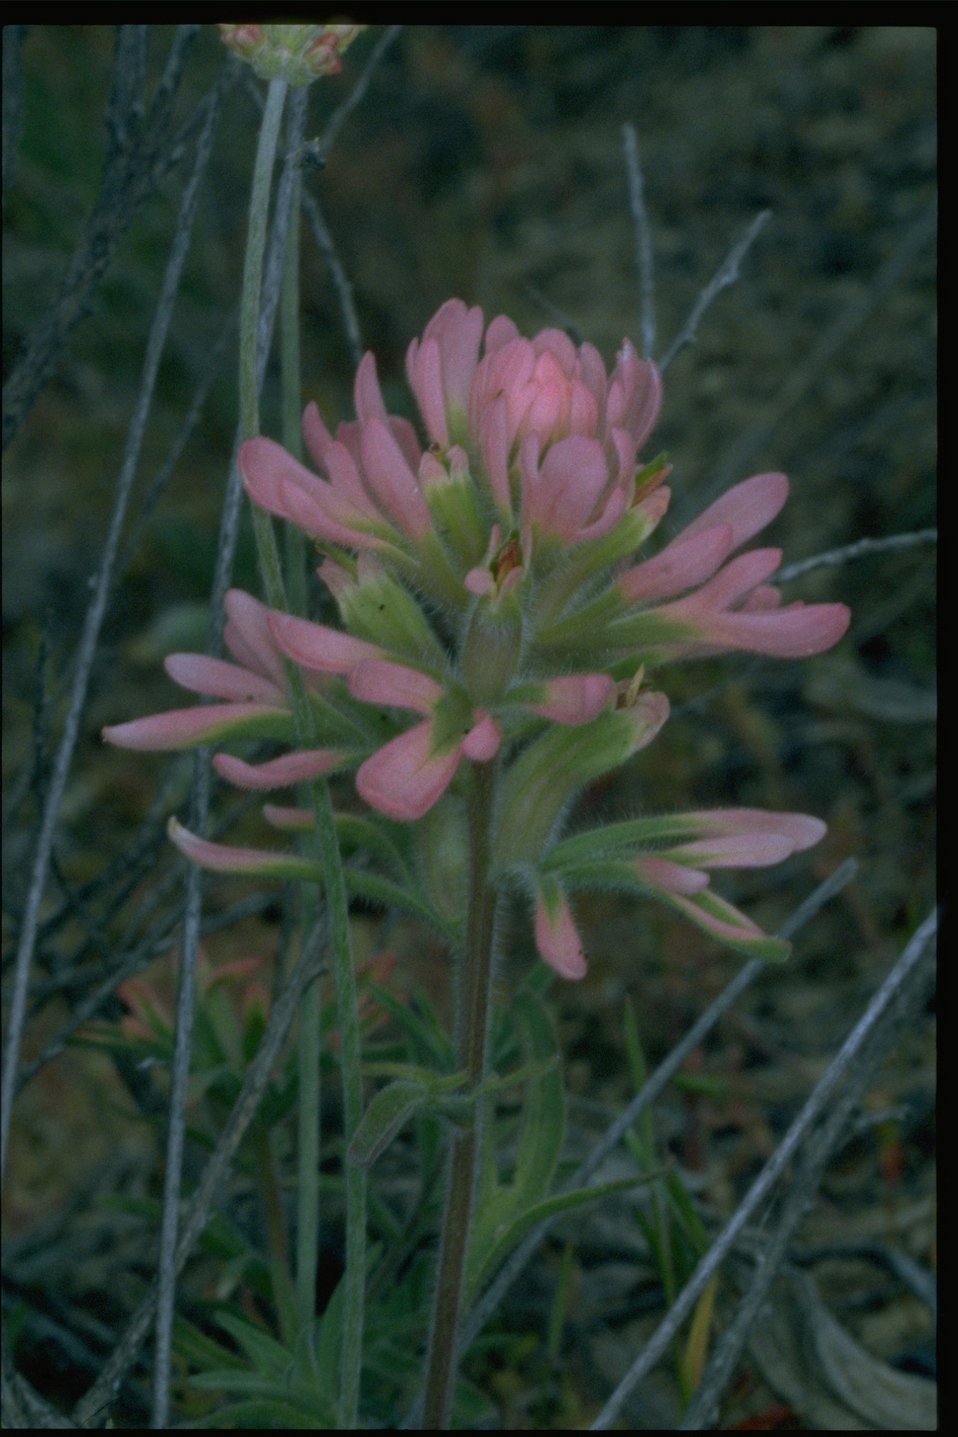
Closeup shot of Pink Indian Paintbrush wildflower.